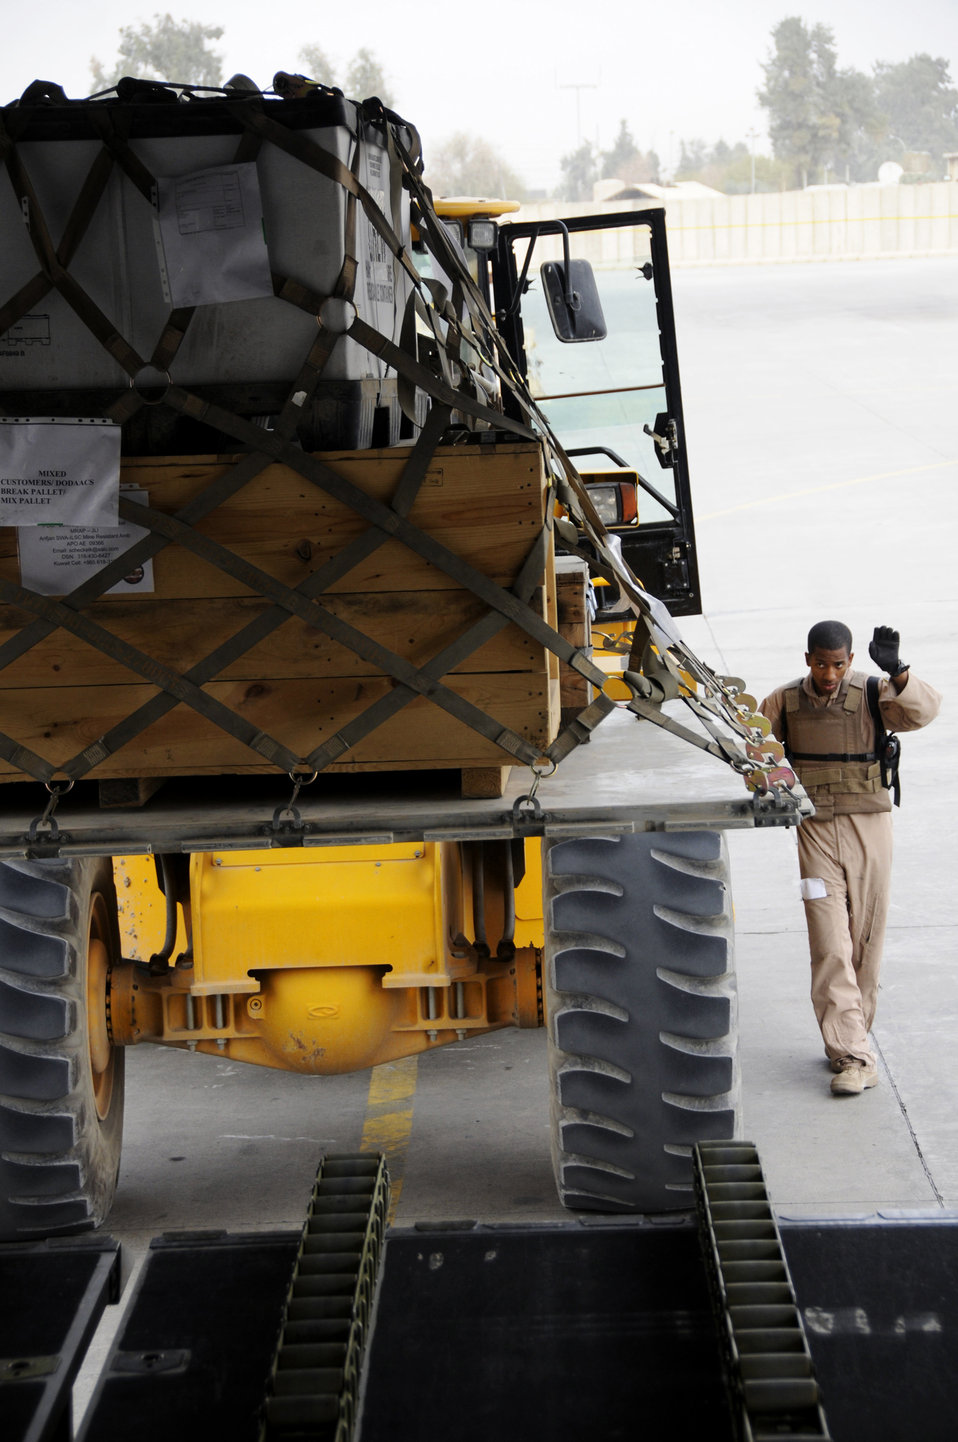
Airlift delivers for warfighters

Senior Airman Anthony Johnson directs a forklift to the back of a C-17 Globemaster III so it can load cargo onto the aircraft Nov. 19 at Joint Base Balad, Iraq. Airman Johnson is an 816th Expeditionary Airlift Squadron loadmaster deployed from Charleston Air Force Base, S.C. He is a native of Columbus, Ga.